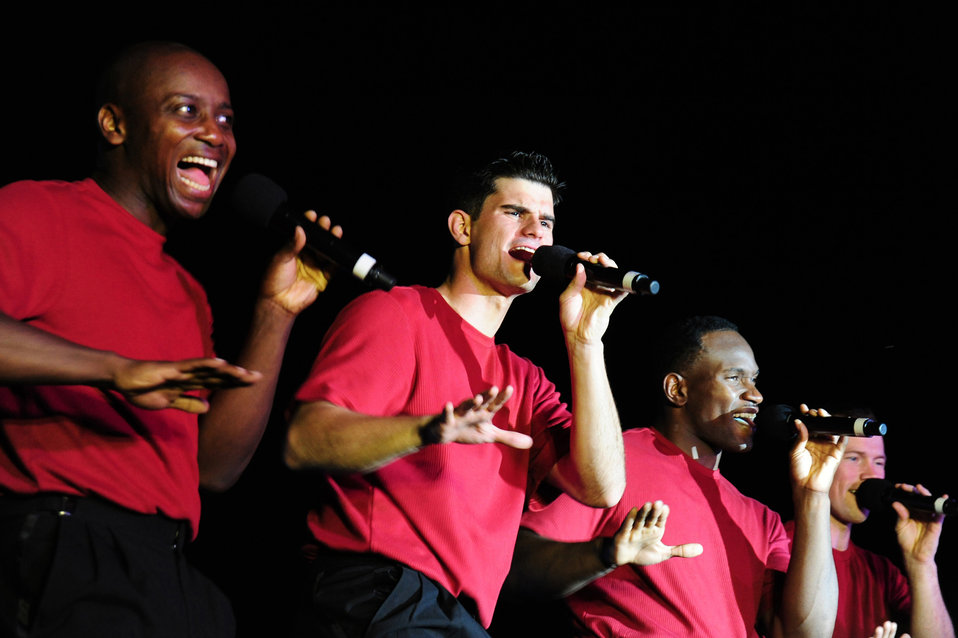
Tops In Blue entertain deployed forces in Kyrgyzstan

Tech. Sgt. Octavious Hill, Staff Sgt. Robert Kalert, Staff Sgt. Wendell Boone and Senior Airman Timothy Womble sing and dance July 9 at Manas Air Base, Kyrgyzstan. Tops In Blue made their deployed location debut as they entertained coalition military personnel with two high-energy shows at the base. Tops in Blue's home station is Lackland Air Force Base, Texas.